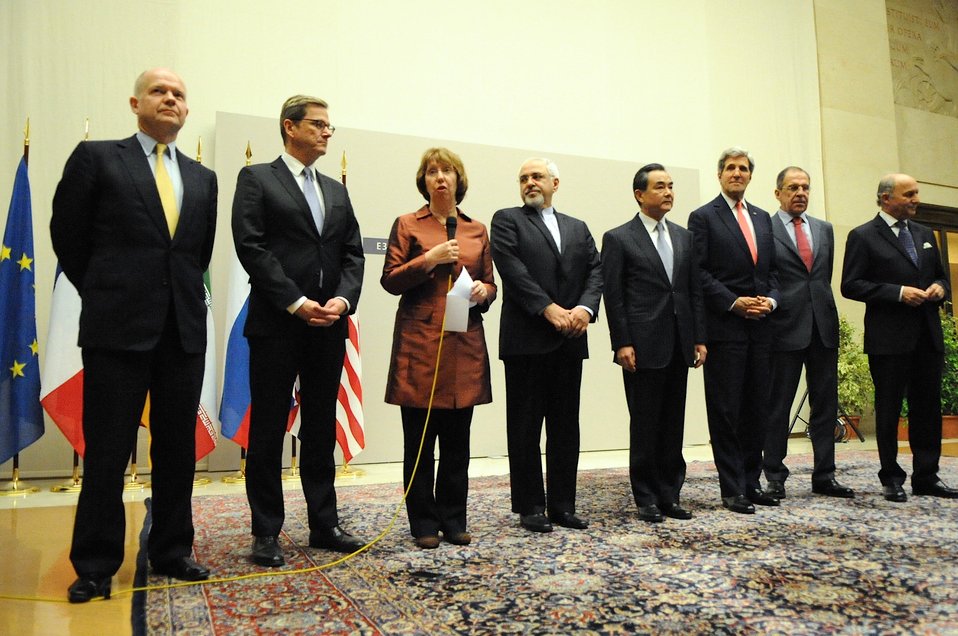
EU High Representative Ashton Speaks at the UN in Geneva, Switzerland

U.S. Secretary of State John Kerry and his fellow P5 1 foreign ministers, as well as Iranian Foreign Minister Javad Zarif, center, listen as European Union High Representative Catherine Ashton speaks at United Nations Headquarters in Geneva, Switzerland, after the group concluded negotiations about Iran's nuclear capabilities on November 24, 2013.